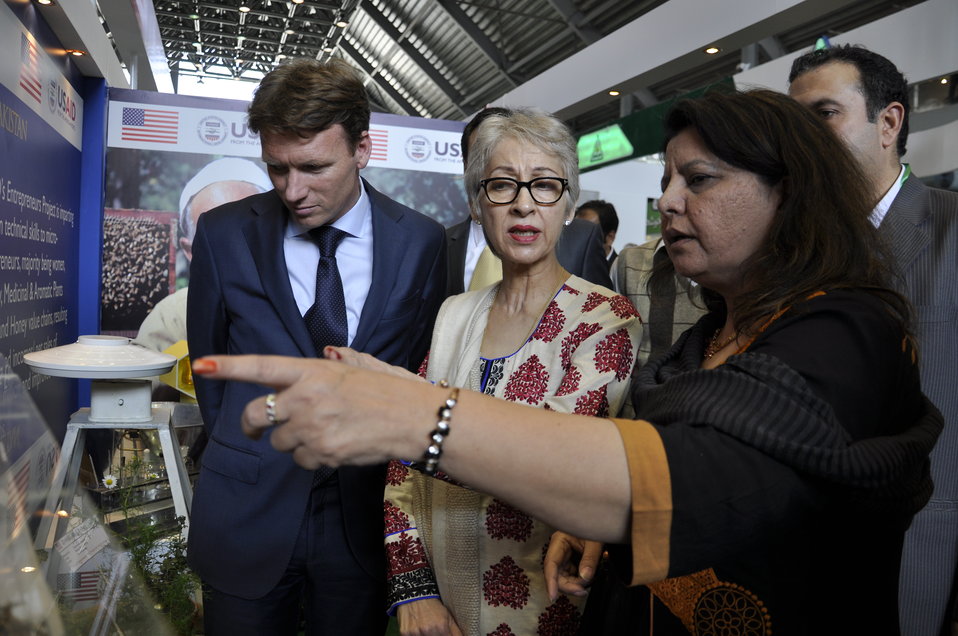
Ambassador of The Netherlands, Mr. Marcel de Vink interacting with the team of USAID's Entrepreneurs Project at Dawn Sarsabz Pakistan Agri Expo.